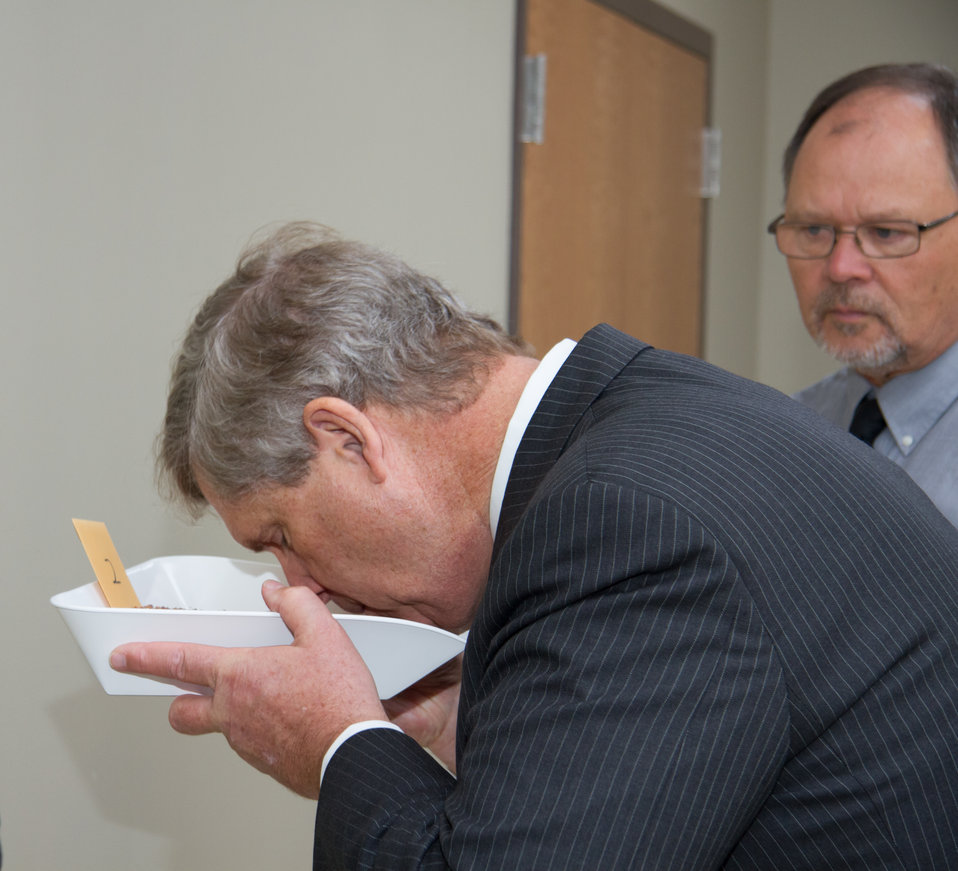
James Whalen, Chair of Grain Inspection, Packers and Stockyards Administration (GIPSA), Board of Appeals and Review, look on, as Agriculture Secretary Tom Vilsak checks the odor of a special sorghum sample that GIPSA developed to standardize the sorghum musty odor interpretive line in Kansas City, MO, on Wednesday, Oct. 23, 2013.